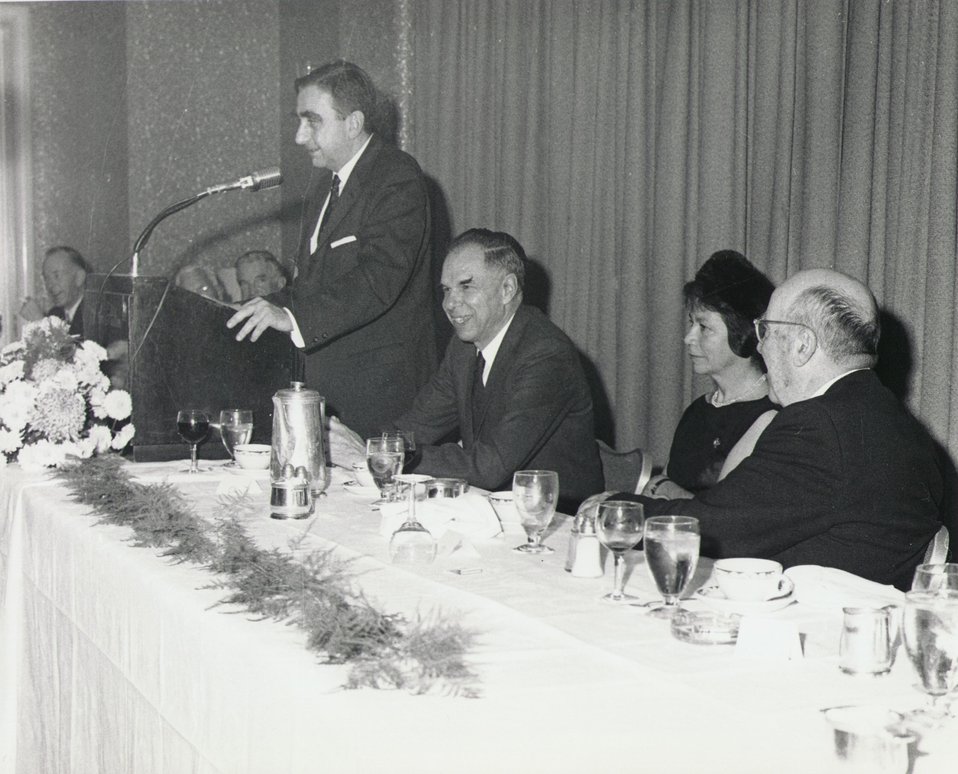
Fermi Award Ceremony for Teller in 1962.